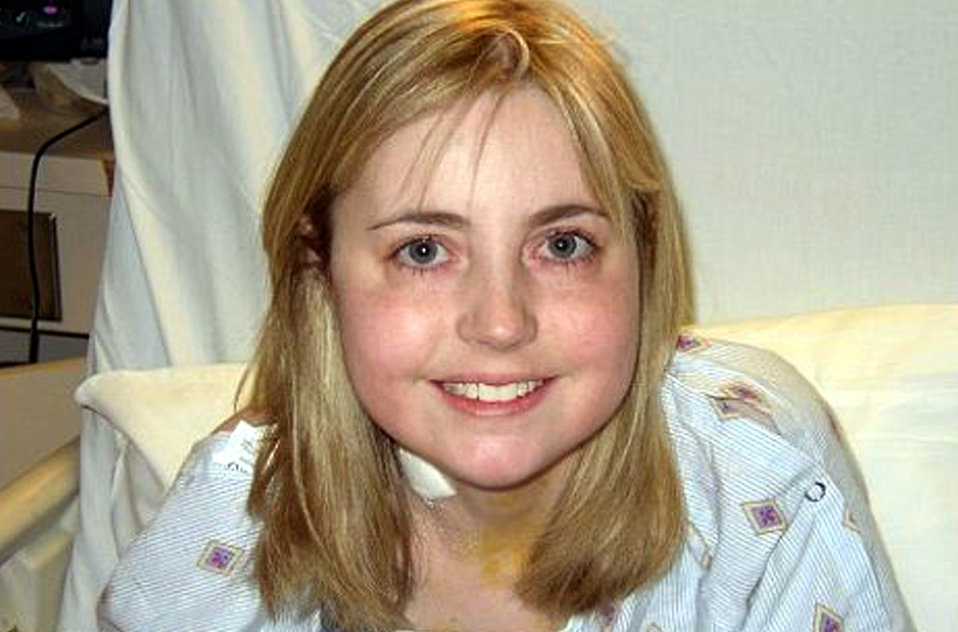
Breathing easier

DURHAM, N.C. -- Theresa Merkal recovers at Duke Medical Center after a double lung transplant in December. Mrs. Merkal was diagnosed with cystic fibrosis at age 2. She and her husband, 2nd Lt. Brian Merkal, moved to Pope Air Force Base shortly before her transplant under the Humanitarian Reassignment Program. Lieutenant Merkal is assigned to the 43rd Security Forces Squadron.